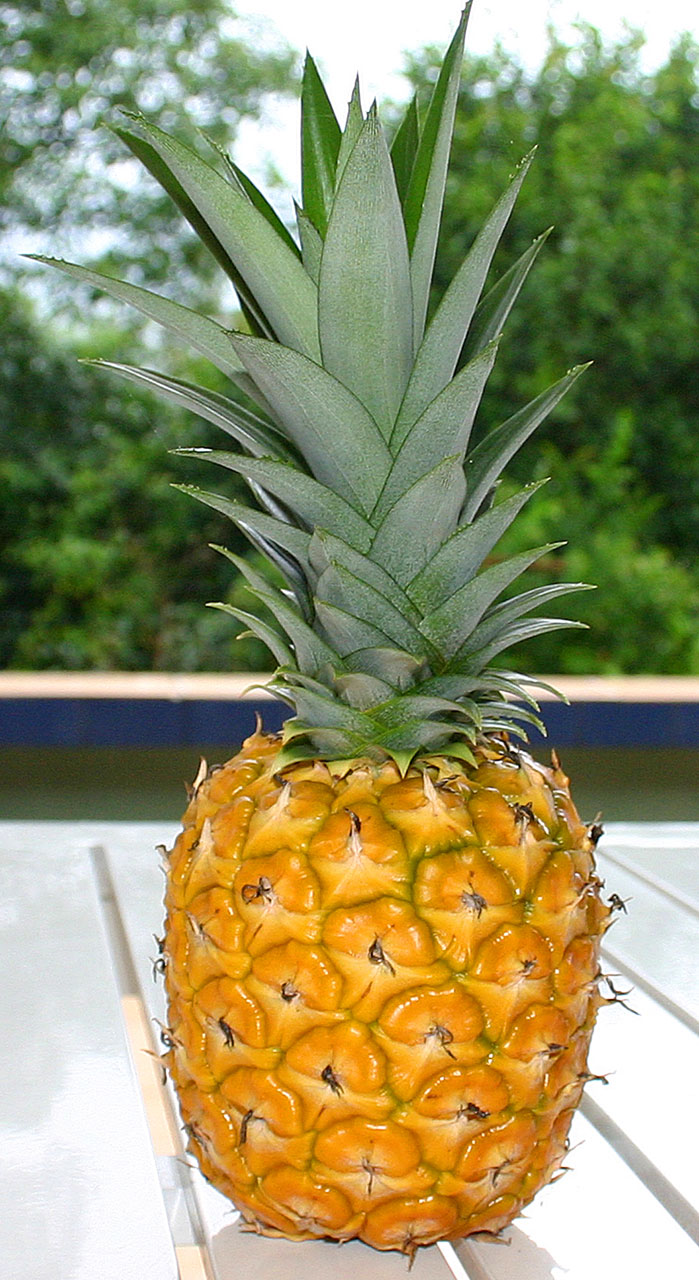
Ripe pineapple.